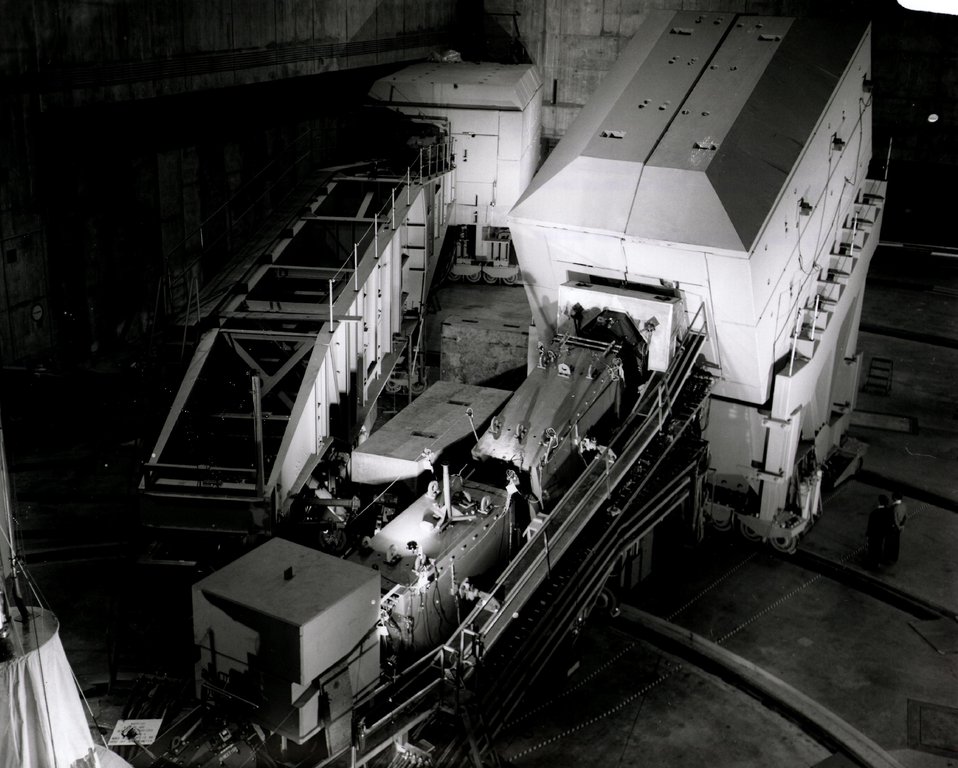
Two huge spectrometers mounted on rails in the End Station A at SLAC. Circa 1968.